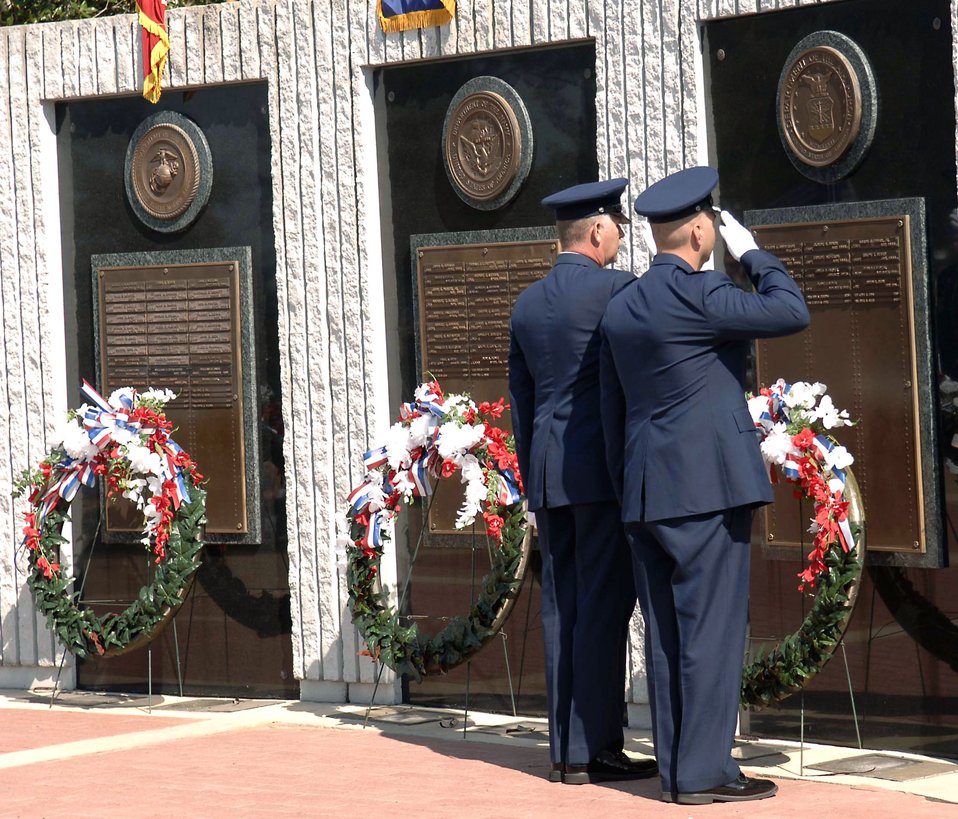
Explosive ordnance members honor fallen heroes

Chief Master Sgt. Robert Inman and Maj. Eric Bollinger salute the Explosive Ordnance Disposal Memorial during the Explosive Ordnance Disposal's 38th Annual Memorial Service April 21 at Eglin Air Force Base's Kauffman EOD Training Complex in Florida. Airmen added to the memorial this year were Capt. Kermit O. Evans, Master Sgt. Brad A. Clemmons, Tech. Sgt. Walter M. Moss, Tech. Sgt. Timothy R. Weiner, Senior Airman Elizabeth A. Loncki and Senior Airman Daniel B. Miller.